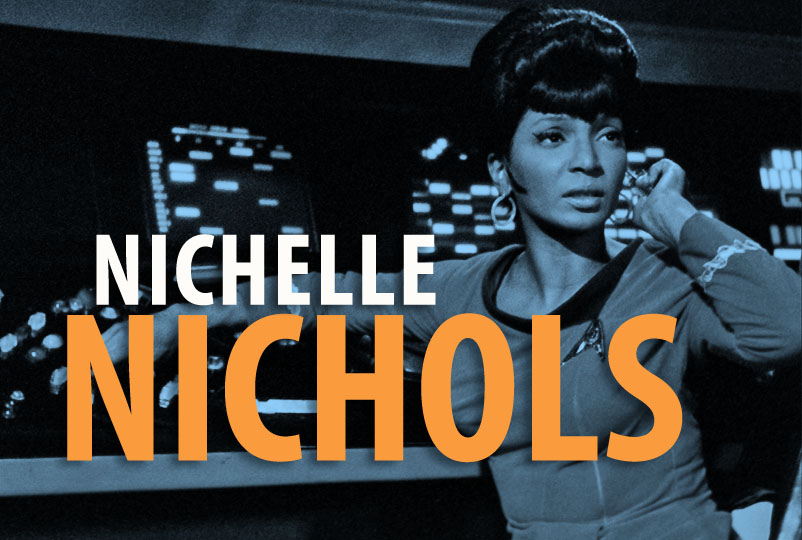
Nichelle Nichols